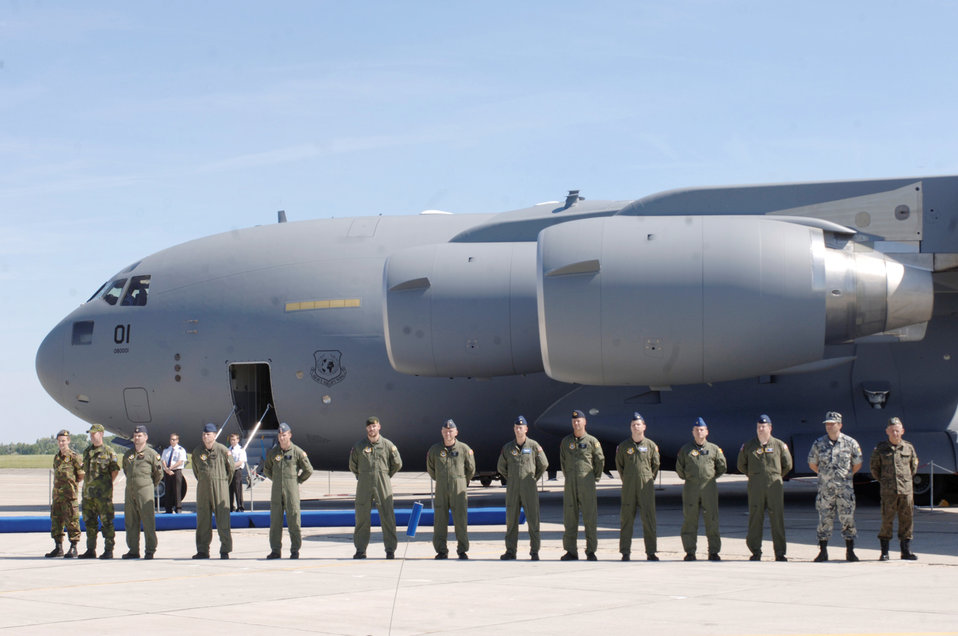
Strategic Airlift Capability conducts first flight in support of ISAF

Airmen representing the U.S. and 11 partnering nations stand in front of a C-17 Globemaster III for the multinational Heavy Airlift Wing at Papa Air Base, Hungary. The organization that will provide strategic airlift worldwide for humanitarian, disaster relief, and peacekeeping missions in support of the European Union, United Nations and NATO.